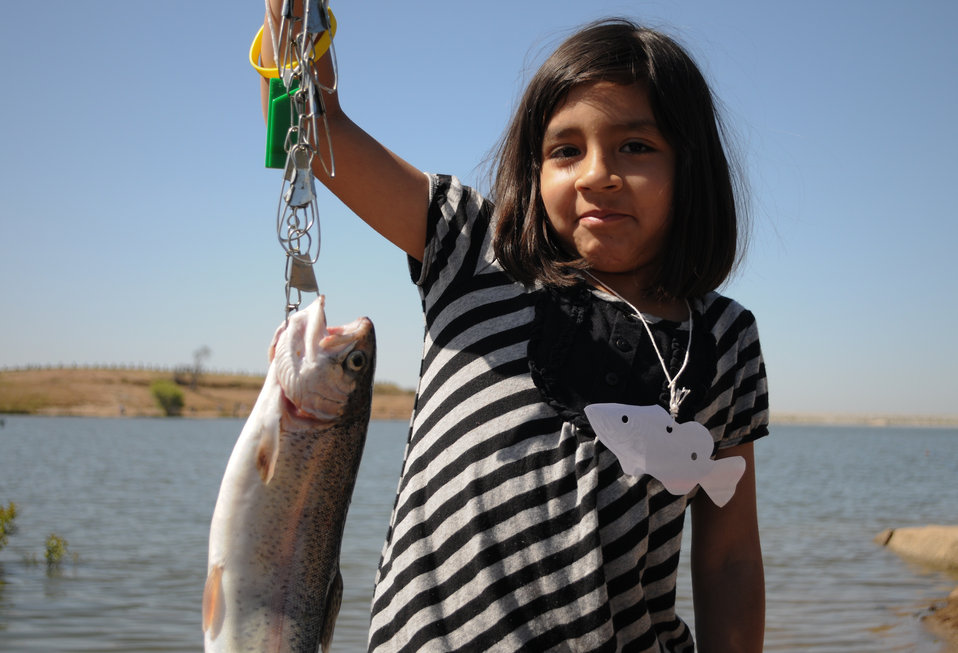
Kids Fishing Day at Hensley Lake

HENSLEY LAKE, Calif. (April 30, 2011) – Daniella Bueno shows off her catch during the 15th annual Kids Fishing Day here April 30. The Sacramento District’s Hensley and Eastman lakes take turns hosting the event, which provides free loaner gear and clinics on fishing techniques and water safety to help connect kids with the outdoors.